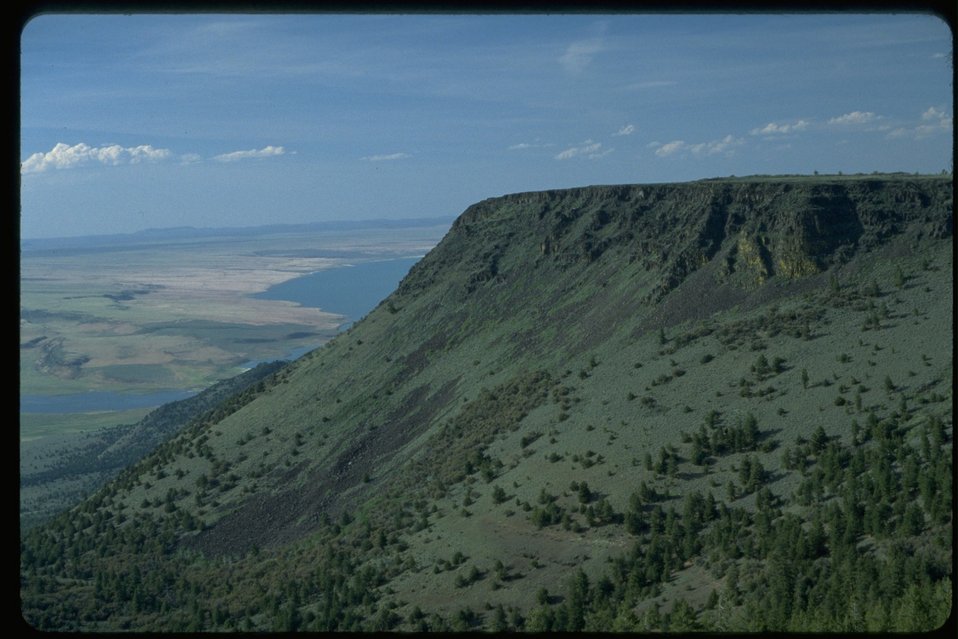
Abert Rim, view from Forest Service Hang Glider Site.